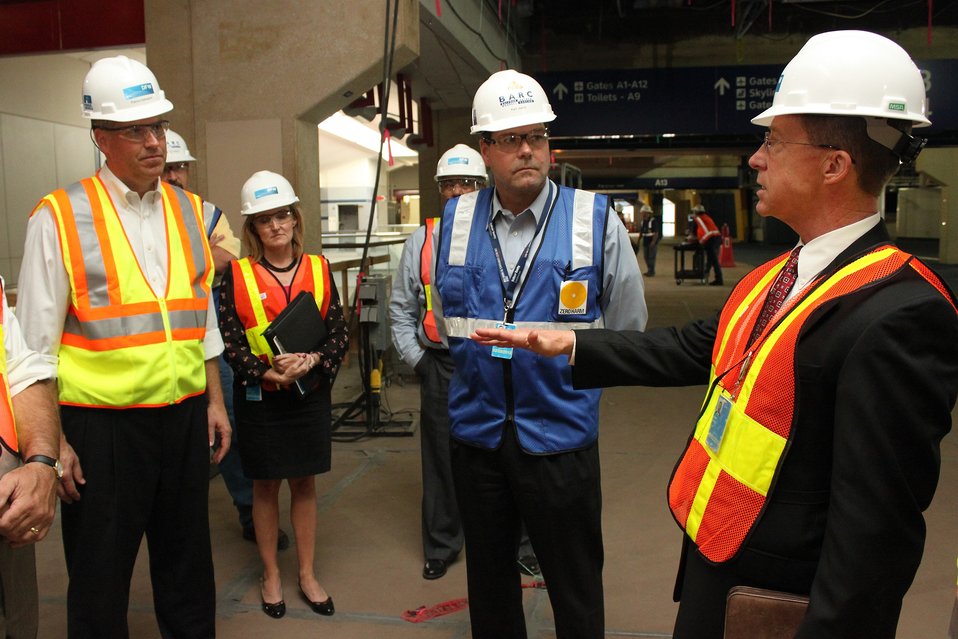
DFW Tour

Jim Espinoza (far right), Dallas Fort Worth (DFW) Terminal manager, and staff conduct a tour of the ongoing renovation of the Dallas Fort Worth (DFW) Airport for NIST’s Pat Gallagher (far left) . Baldrige Award winner Freese & Nichols Inc. is an engineering firm participating in the renovation.